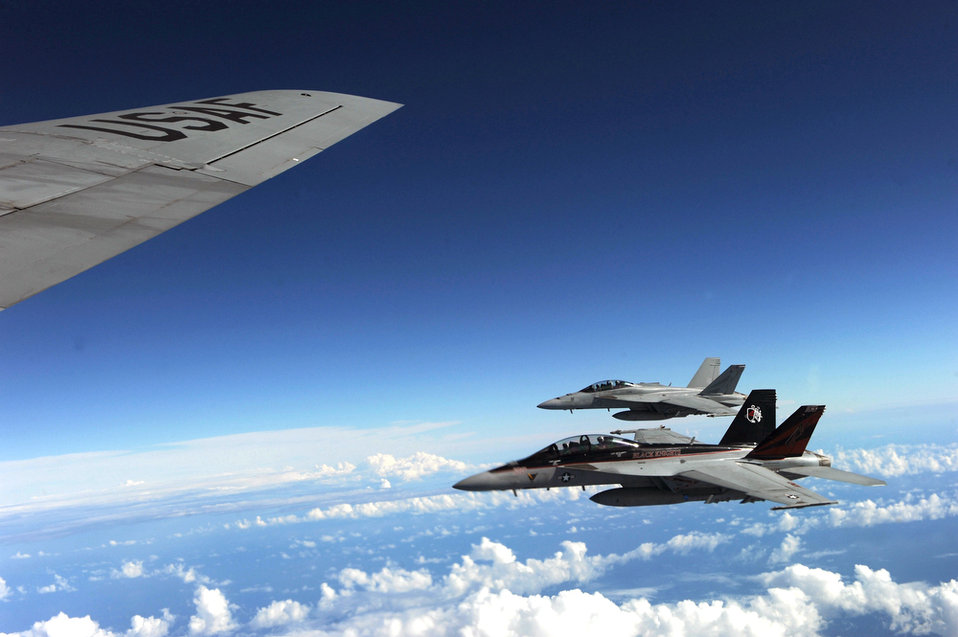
Refuelers keep aircraft flying during exercise

Two U.S. Navy F/A-18F Super Hornets fly off the wing of a KC-135 Stratotanker from the 507th Air Refueling Wing at Tinker Air Force Base, Okla., after being refueled over Hawaiian air space July 20, 2010, during the Rim of the Pacific exercise. RIMPAC, the world's largest maritime exercise, is a biennial event which stresses interoperability among the 14 nations participating in the exercise. The tanker is staging out of Joint Base Pearl Harbor-Hickam, Hawaii.